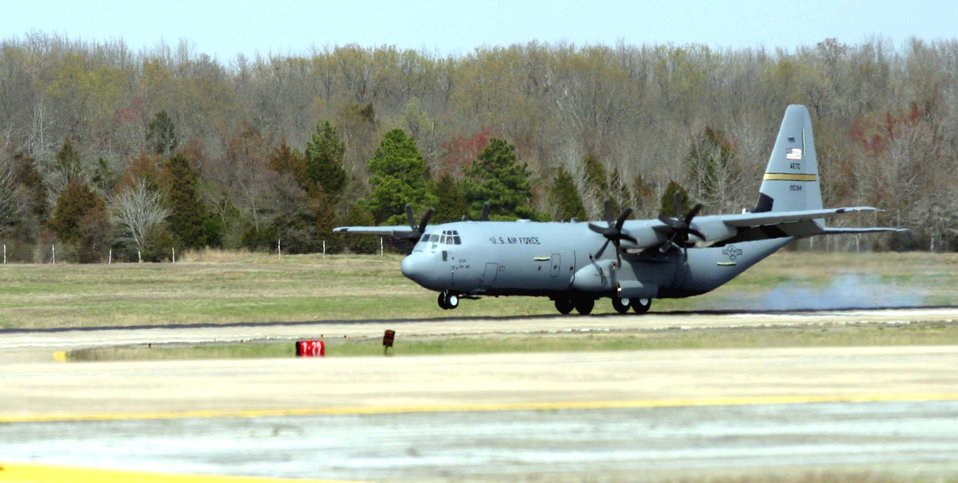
C-130J on the way

LITTLE ROCK AIR FORCE BASE, Ark. -- The Air Force's first newest C-130J Hercules touches down here March 19 after flying from the Lockheed Martin production plant on Dobbins Air Reserve Base, Ga. This aircraft is the first J model assigned to an active-duty unit.